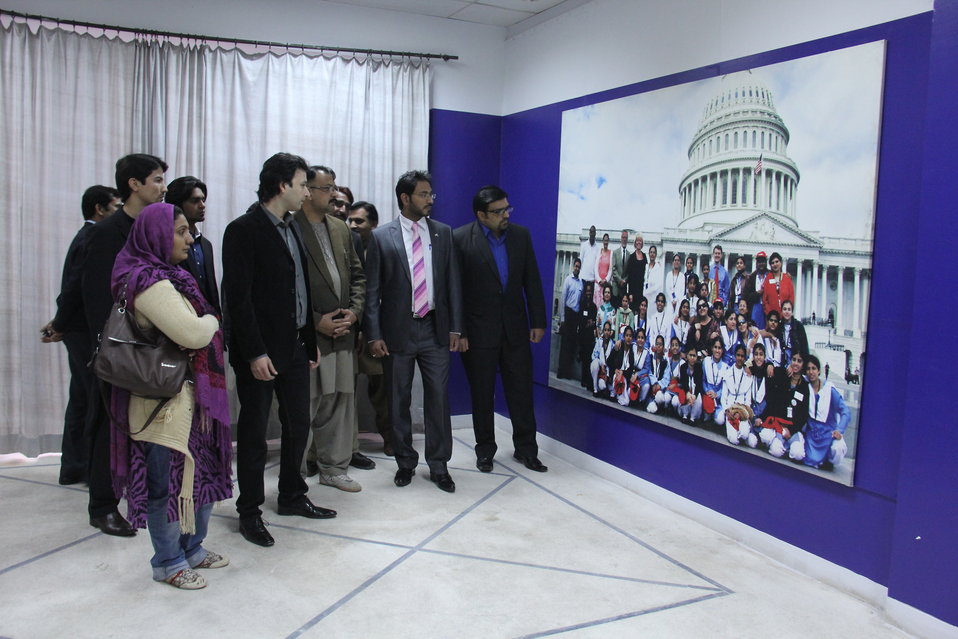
Attendees observe a photo from one of US-Pakistan Student Exchange programs.